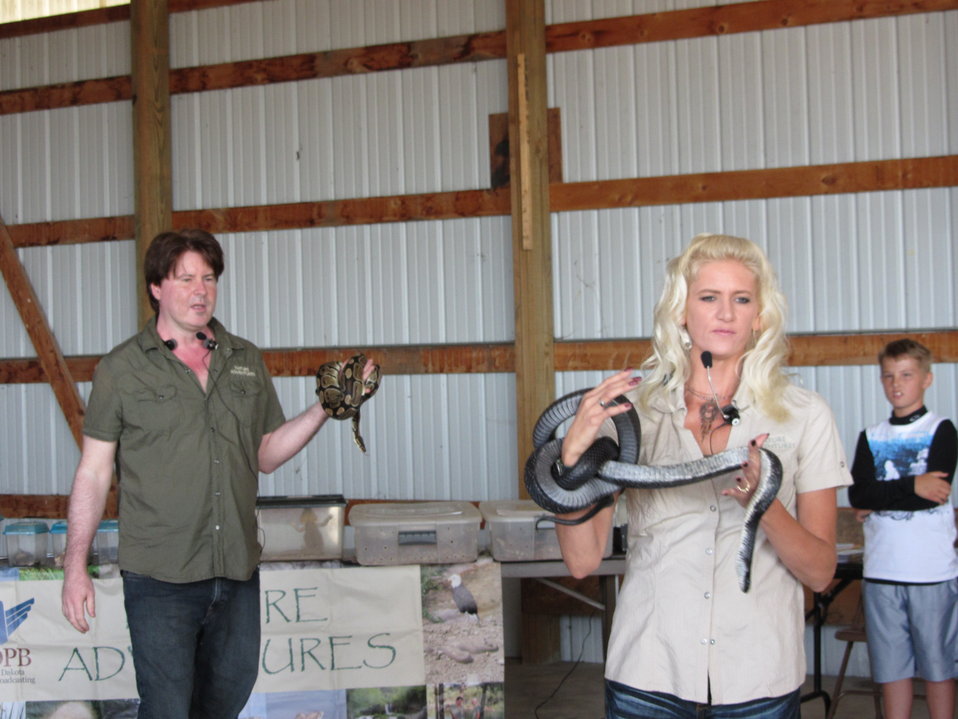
2011 Huron Prairie Fest

Nature Adventures' Terri and Todd had great enthusiasm when teaching everyone about the lives of reptiles.